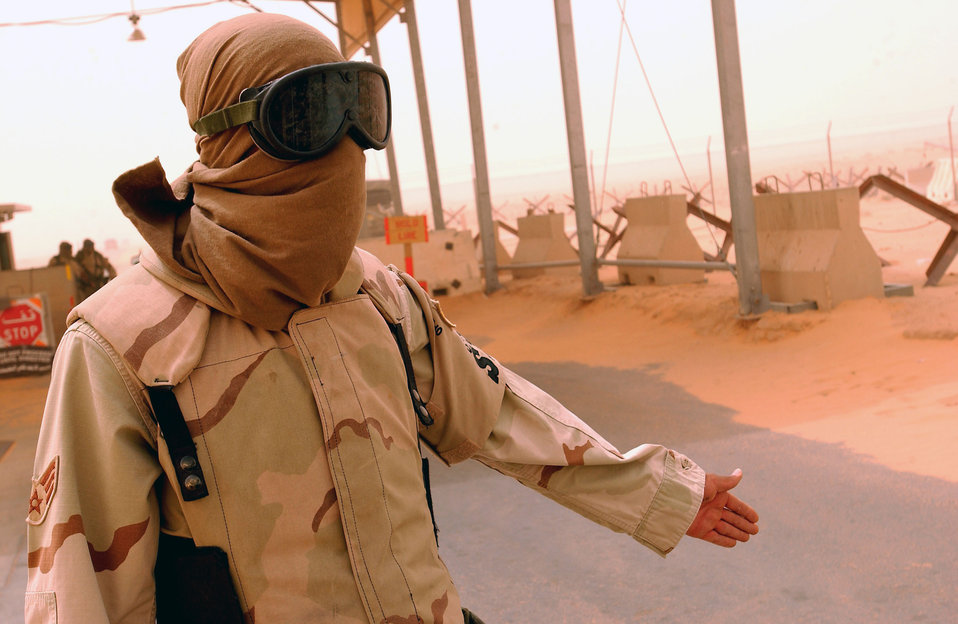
Stop here

OPERATION IRAQI FREEDOM -- Senior Airman Tyler Palyton, a security forces journeyman deployed from the 18th Security Forces Squadron, Kadena Air Base, Japan, to the 363rd Expeditionary Security Forces Squadron, checks a vehicle's authorization prior to proceeding through an entry control point during a sand storm on April 7.